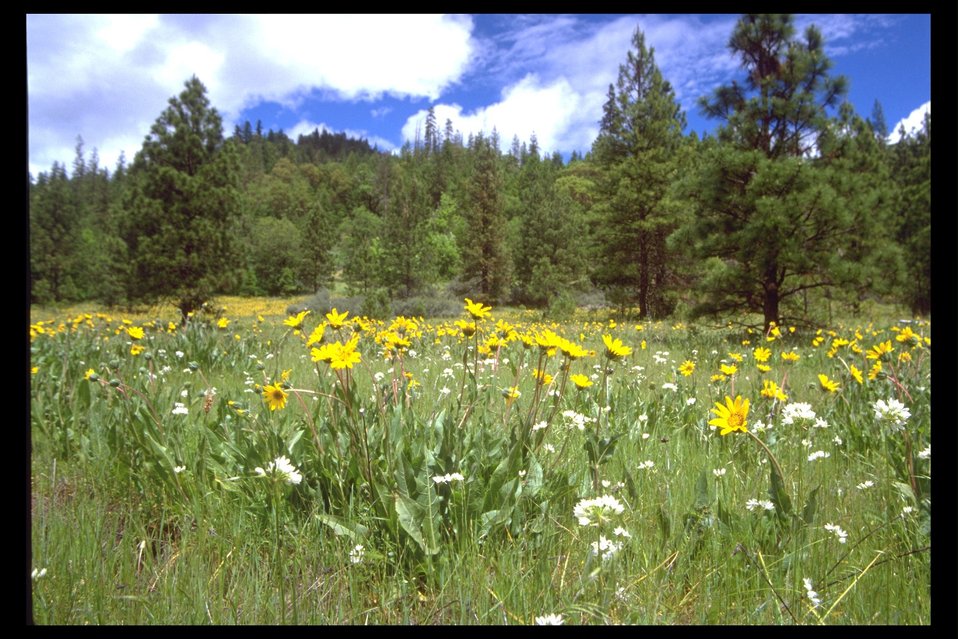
Field along Highway 227 with Mule's Ears (Wyethia angustifolia) and White Hyacinth.